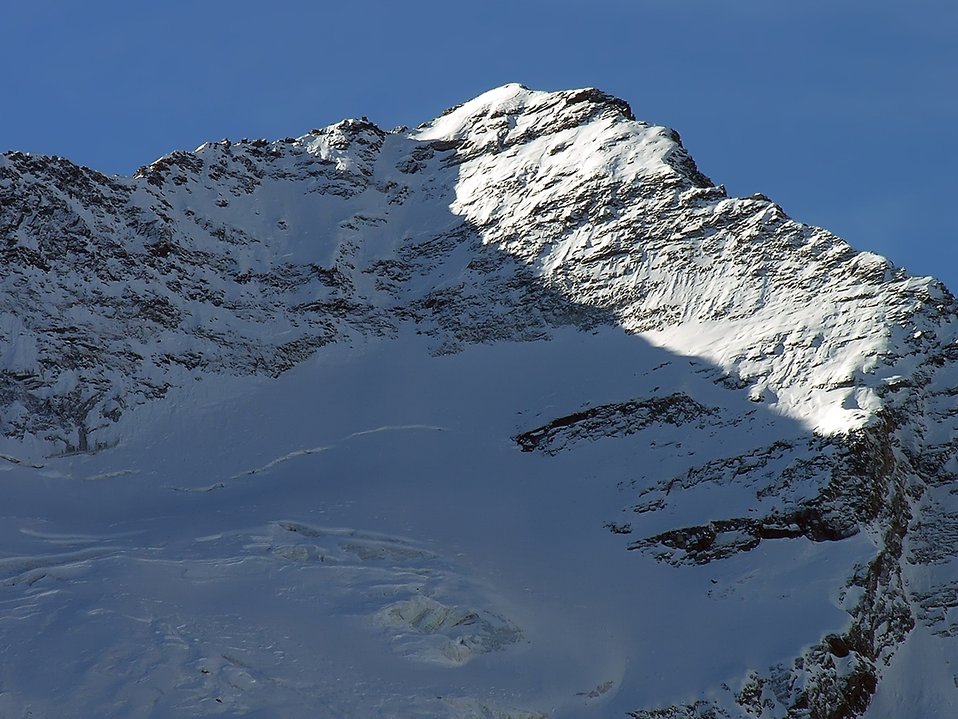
Italiano: Monti la punta delle Sengie Lillaz (25-03-2005) - Alpi Graie - Italia